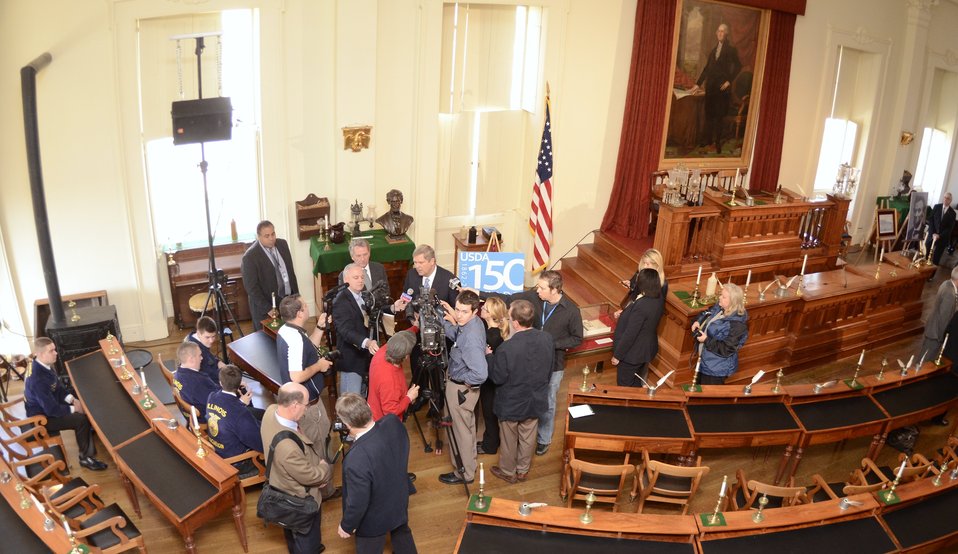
Agriculture Secretary Tom Vilsack speaks with the press at the Old State Capitol in Springfield, IL, unveiling the graphic to commemorate the 150th Anniversary of the creation of the U.S. Department of Agriculture on Wednesday, November 2, 2011.